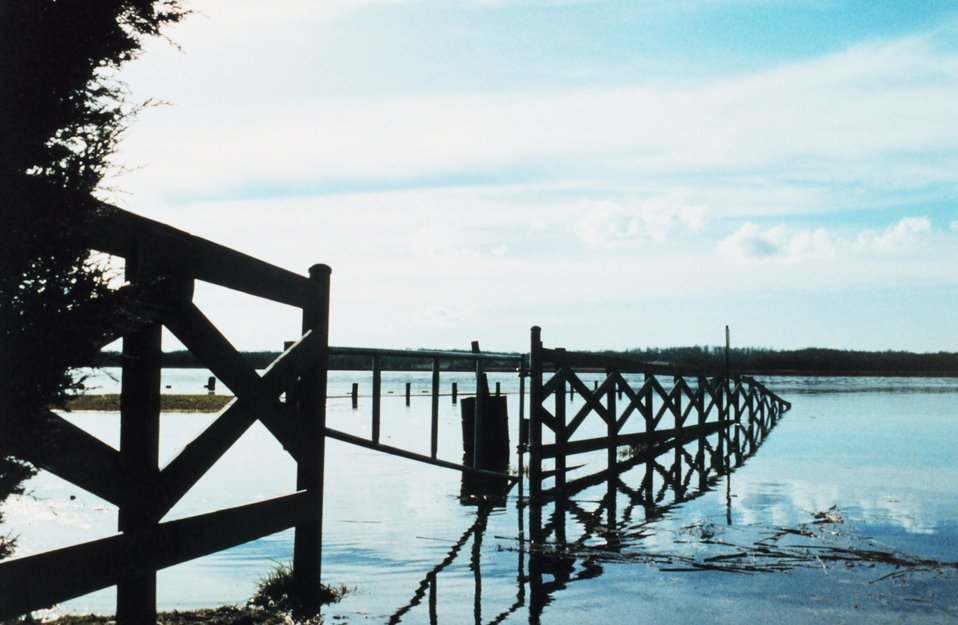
Flooding of low-lying areas at Holland Cliffs Shores by extreme high tides. Land is being lost at a rate of 1' per year in the Chesapeake Bay region due to combination of sea level rise and subsidence caused by lowering water tables. As population grows, so does demand for fresh water causing further subsidence, making events such as this increasingly common.